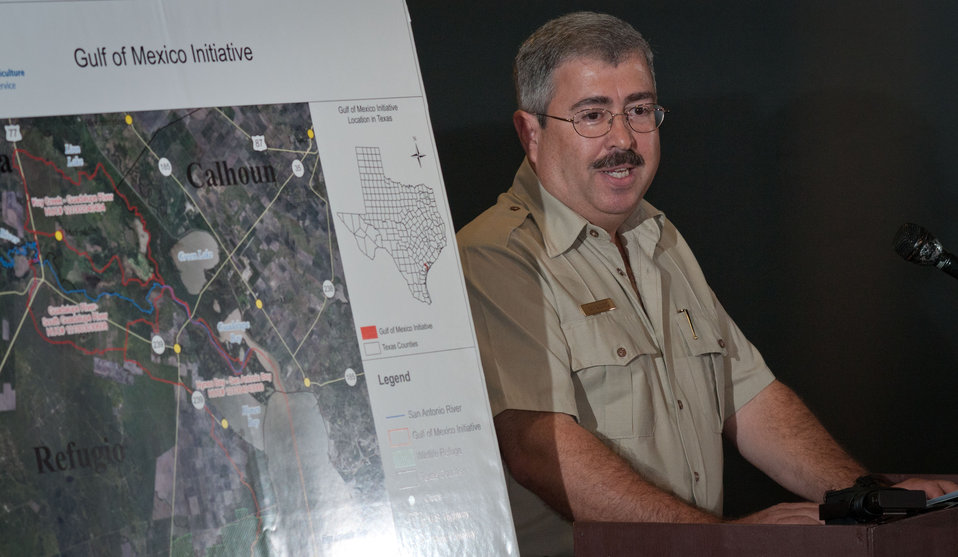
U.S. Department of the Interior, Fish and Wildlife Service Aransas National Wildlife Refuge Manager Dan Alonso gave background information about the 115,000-acre refuge that was established in 1939, during the roll out the Gulf of Mexico Initiative (GOMI) in Texas, at the refuge's visitor center in Austwell, TX, on Friday, Dec. 16, 2011. The Aransas Refuge is a 15,000-acre wildlife sanctuary established in 1939. Its fresh water comes from the San Antonio River, which flows by the historic Alamo southeasterly towards the Guadalupe River at the estuary of San Antonio Bay, the primary body of water for the refuge.